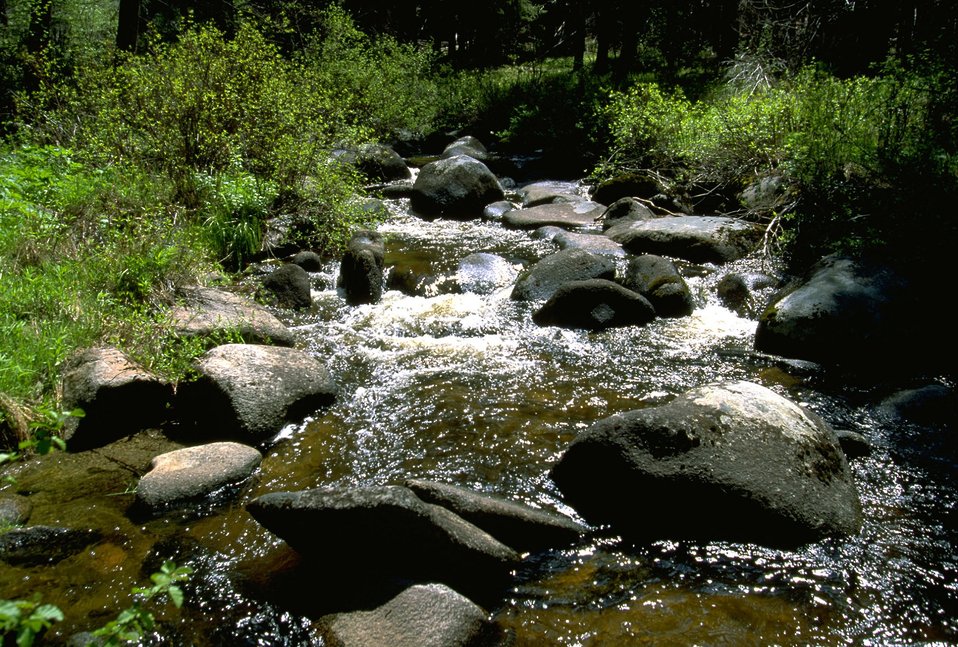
Water in Moose Creek shimmering in the sunlight